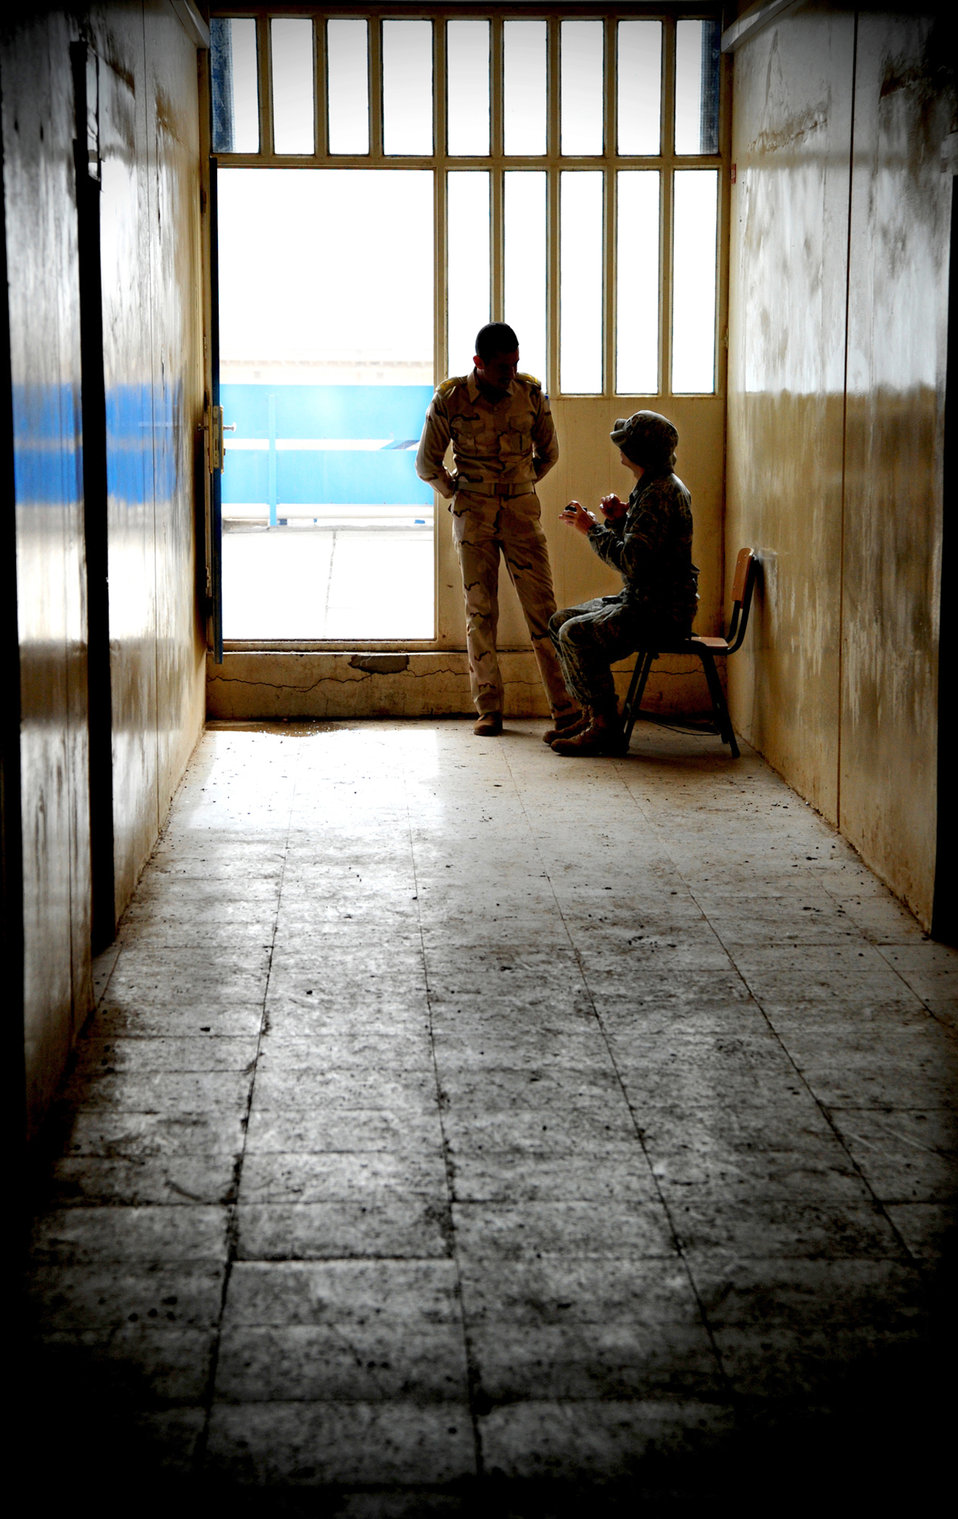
Airmen build IAF foundation

Lt. Col. Christopher Finta talks with an Iraqi airman in the hallway of the Iraqi Air Force Training School Dec. 13, 2010, in Taji, Iraq. Airmen with the 821st ETRS work daily with the faculty and students at the school to help it become an enduring and self-sufficient training pipeline for the Iraqi air force and Ministry of Defense. Colonel Finta is the 821st Expeditionary Training Squadron director of operations.